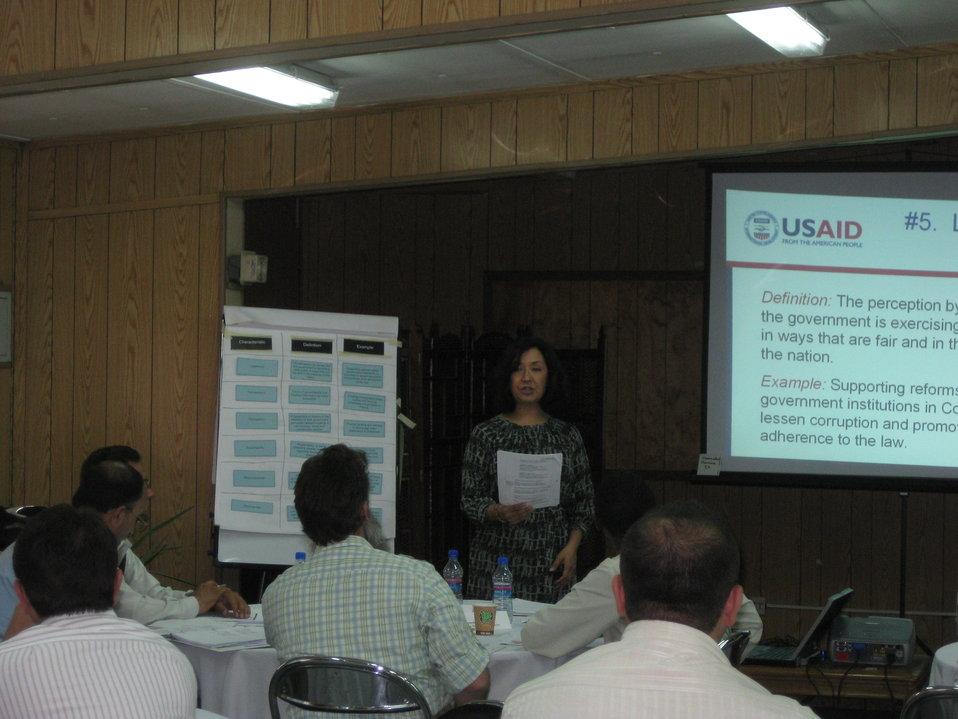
Afghan Youth Voices 023